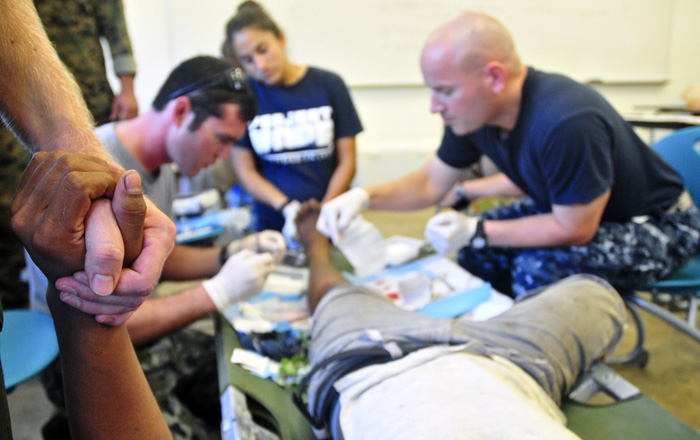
A Micronesian Boy Holds Onto Project HOPE Volunteer Siler's Hand

A Micronesian boy holds onto Project HOPE volunteer, Andrew Siler's hand, while Able Seaman Thomas Pearson of Royal Australian Navy, Lt. Michael Bloir, and Project HOPE volunteer Hanna Taylor puts four sticks in a Micronesian boy's leg at Nanpei medical civic action project site for Pacific Partnership 2011 in Pohnpei, Federated States of Micronesia, on July 9, 2011. Pacific Partnership 2011 will visit the islands of Tonga, Vanuatu, Papua New Guinea, Timor-Leste and the Federated States of Micronesia.